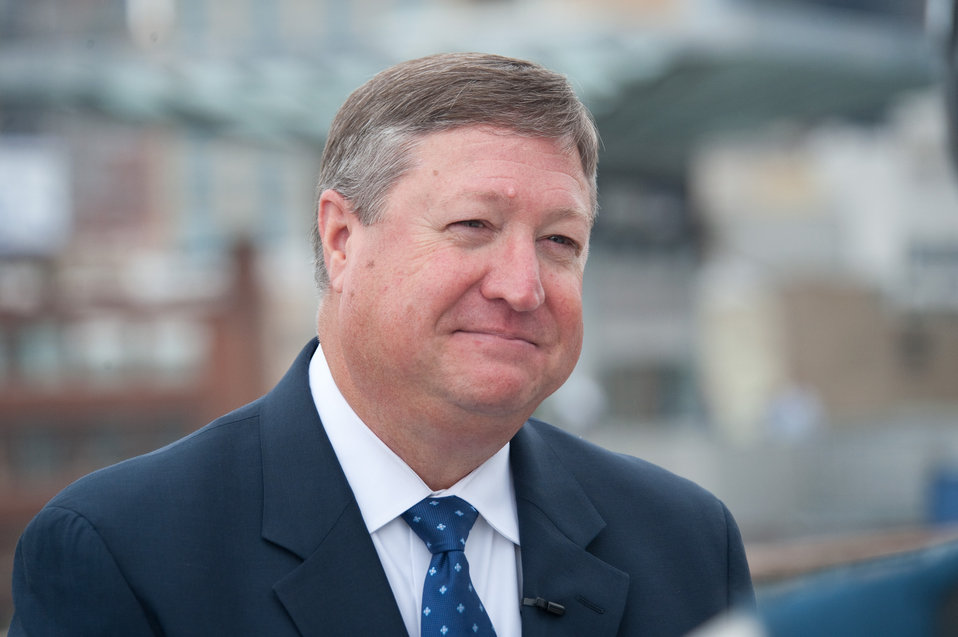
Air Force Week New York City Proclamation Ceremony

The Honorable Michael Donley, Secretary of the Air Force during the Air Force Week New York City proclamation ceremony on the USS Intrepid on Aug. 24, 2010. The event was highlighted by a six-ship flyover by the USAF Thunderbirds. Also attending, was General Raymond Johns, Commander of Air Mobility Command, the Police Commissioner of the City of New York, the Honorable Raymond Kelly, who represented NYC; and Mr. Greg Kelly of